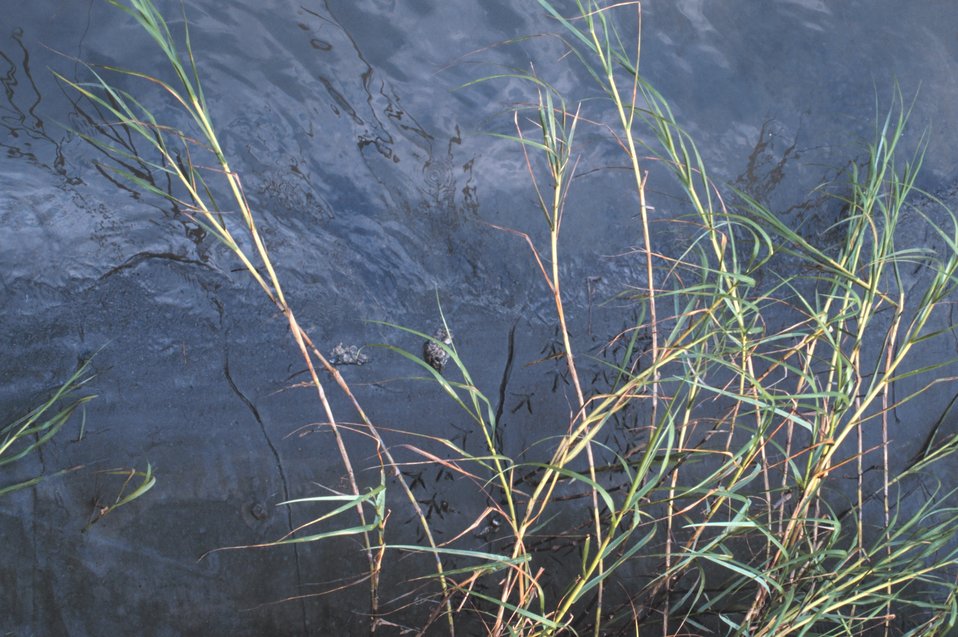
Tidal mudflats